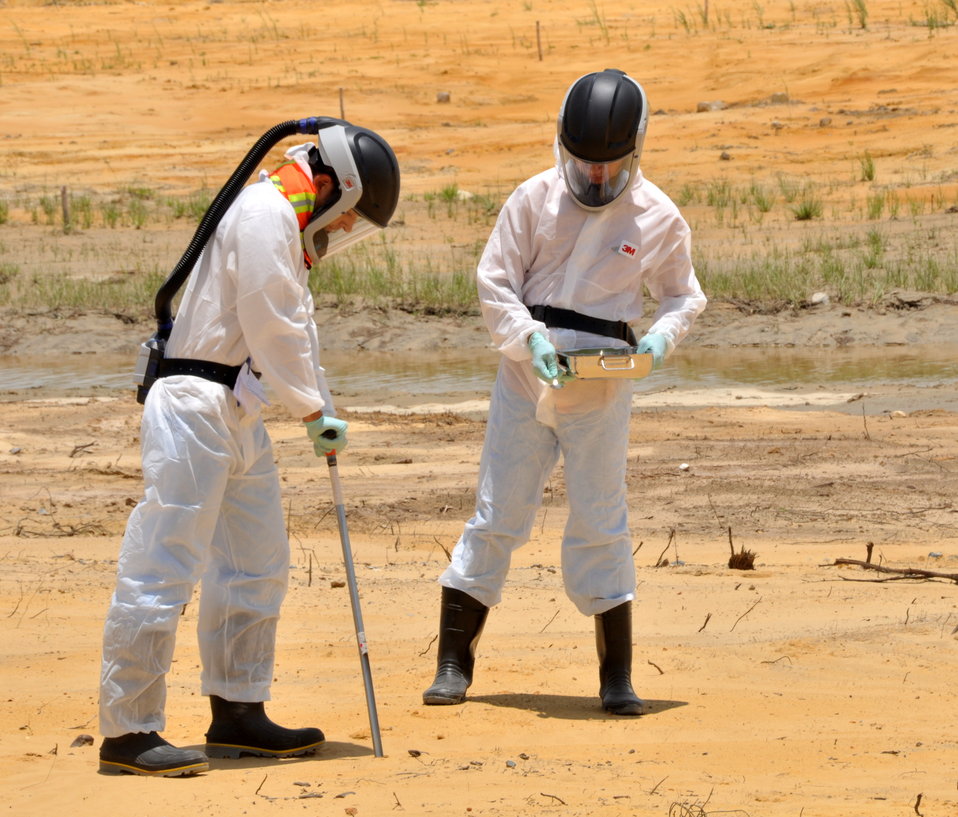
USAID Dioxin Contamination Project Progress: Soil Sampling

Progress at the Environmental Remediation of Dioxin Contamination Project at Danang Airport

July 16, 2013